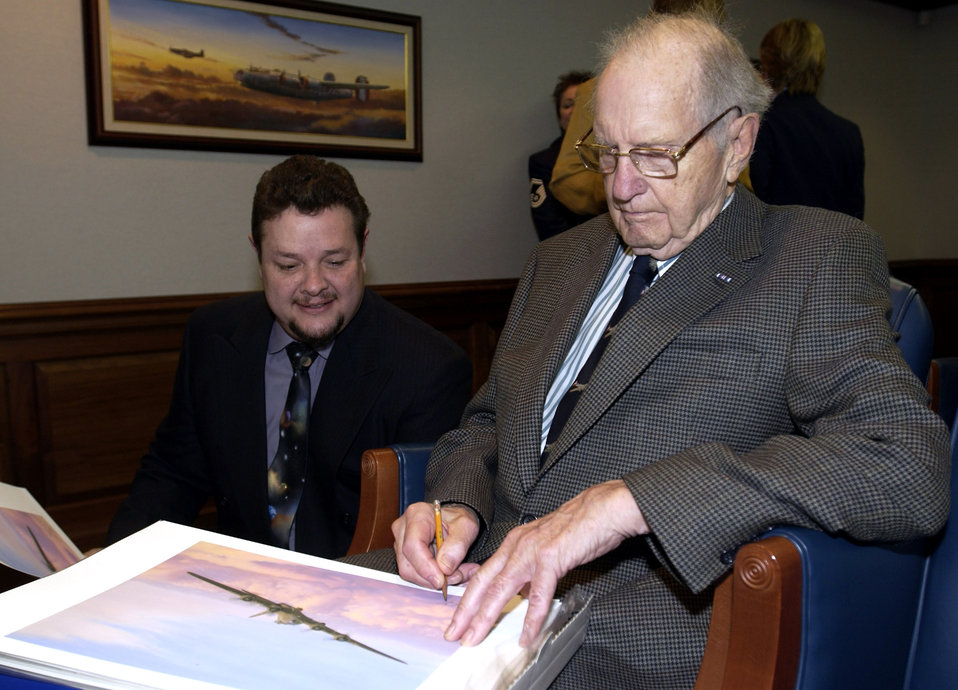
Pretty as a picture

WASHINGTON (AFPN) -- Artist Mickey Harris (left) looks on as retired Air Force Reserve Col. Robert K. Morgan signs lithographs of Harris' painting of the Memphis Belle after it was unveiled during a ceremony in the Pentagon on Jan. 6. The painting of the Boeing B-17 Flying Fortress was dedicated to the Air Force Art Program on behalf of the Memphis Belle Memorial Association and the Memphis Belle War Memorial Foundation. Morgan piloted the Memphis Belle during World War II. It was the first bomber to complete 25 combat missions before returning to the United States.